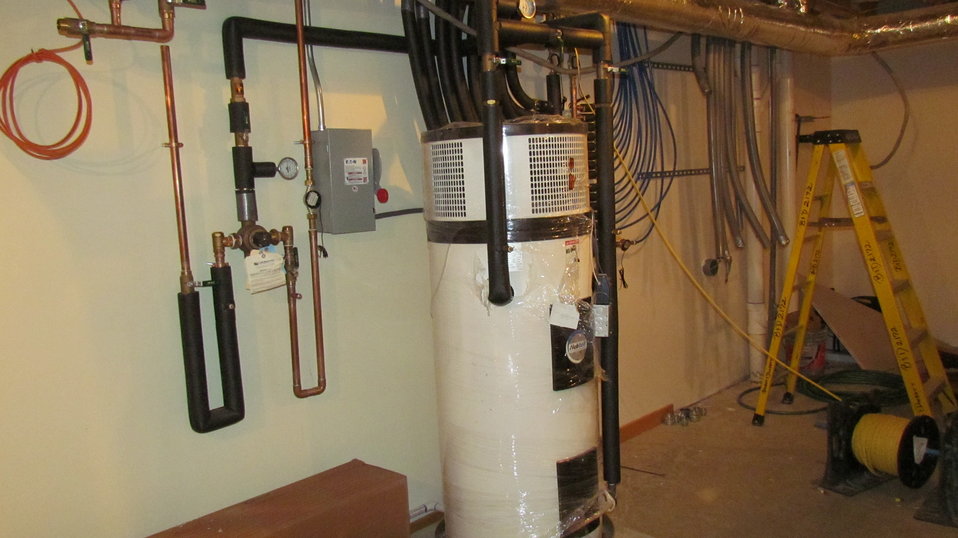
Photograph showing heat pump water heater after installation. The heat pump water heater is used as the auxiliary water heater. If the solar thermal system, due to poor weather conditions, is unable to meet the needs of the simulated family of four, the heat pump water heater will supply the required hot water.